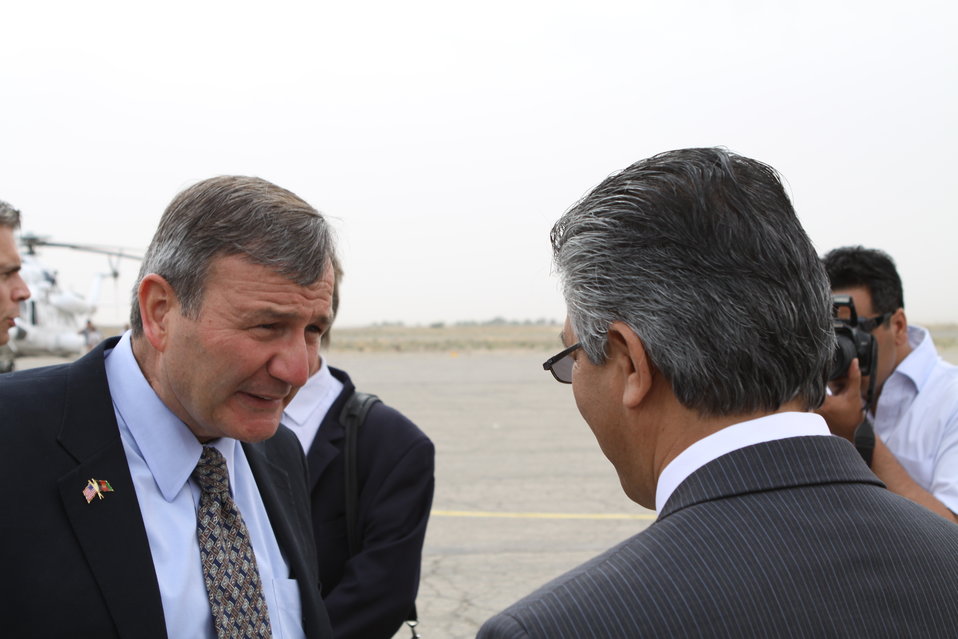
100525 Hirat Marble Conference 029